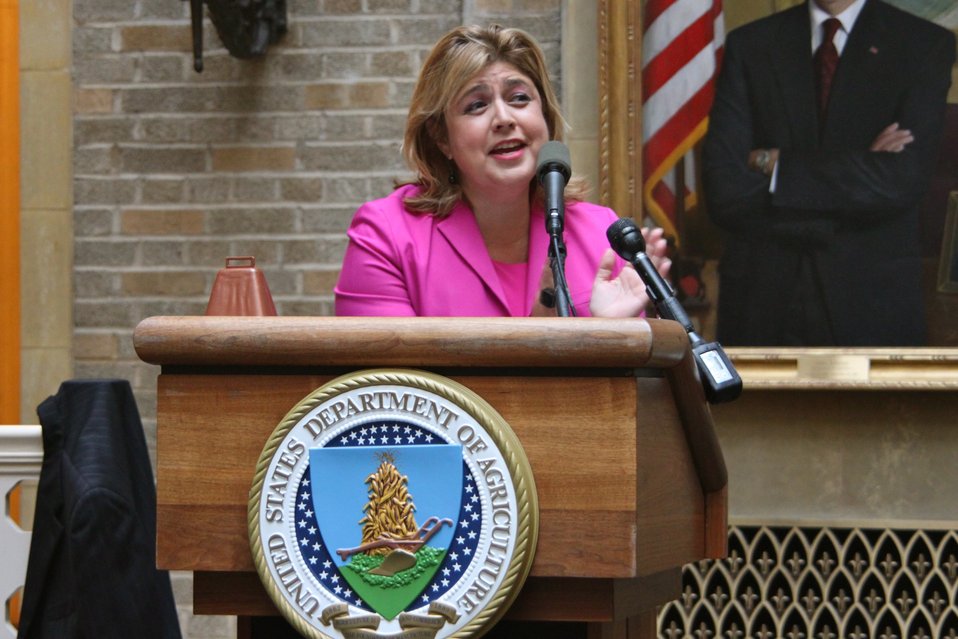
Alonzo Opening the USDA Farmers Market

U.S. Department of Agriculture (USDA) Agricultural Marketing Service (AMS) Administrator Anne Alonzo recognizes the importance of farmers markets to communities and the vibrant D.C. community at the opening of USDA's Farmers Market on Friday, Jun. 7, 2013.